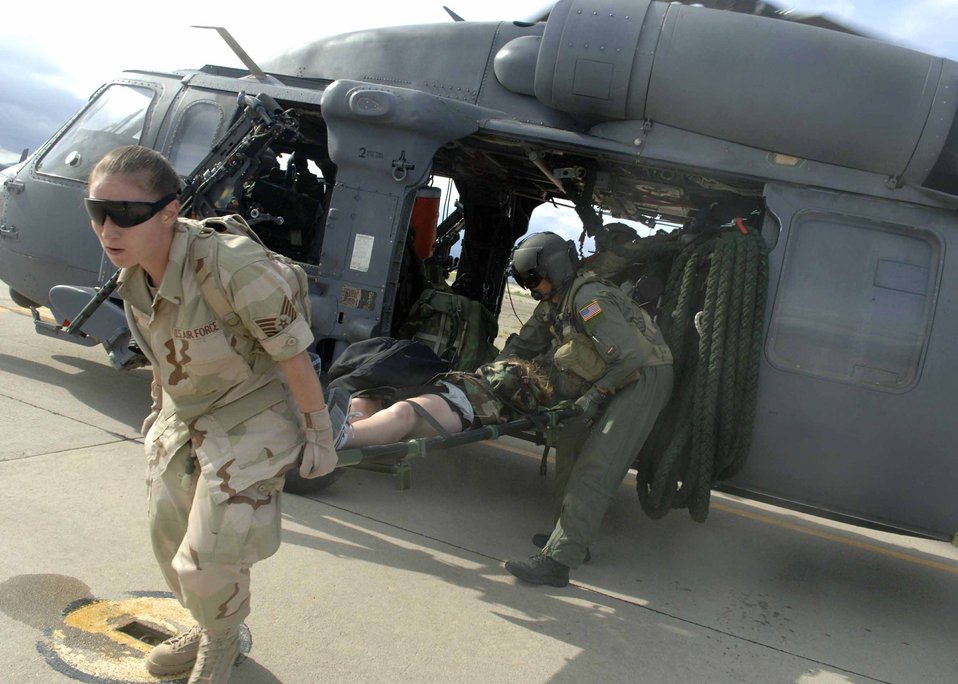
Angel Thunder

Tech. Sgt. Gwen Wear (left) and an aerial gunner unload a simulated mass casualty survivor out of a HH-60 Pavehawk July 27 as part of exercise Angel Thunder. Angel Thunder is a five-day exercise held at and around Davis-Monthan Air Force Base, Ariz. It is designed to provide realistic, full-spectrum recovery training for Air Force active-duty, Guard and Reserve combat rescue forces. Sergeant Wear is with the 58th Rescue Squadron.